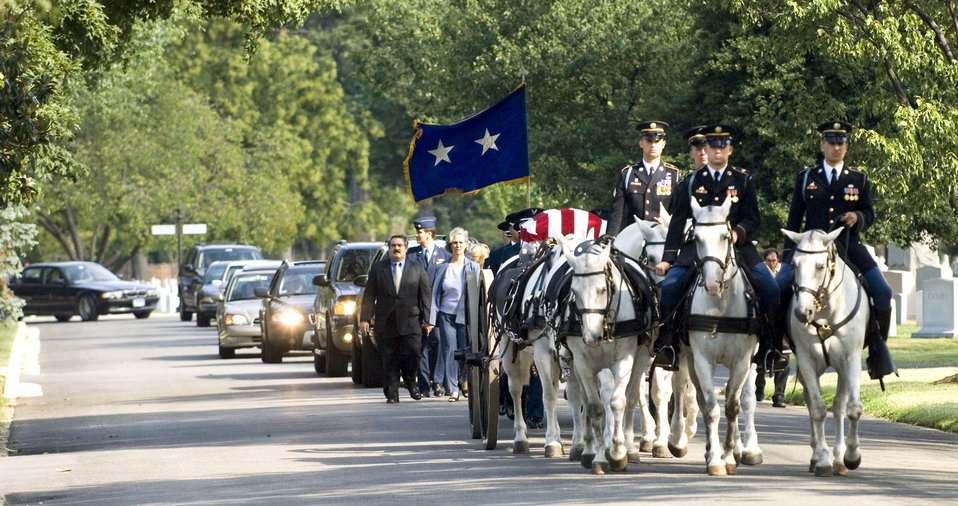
Military pays tribute to World War II bomber pilot

An Army caisson leads a funeral procession for retired Maj. Gen. Jack I. Posner to his final resting place at Arlington National Cemetery on Aug. 11. General Posner was among the last bomber pilots to have served in World War II.